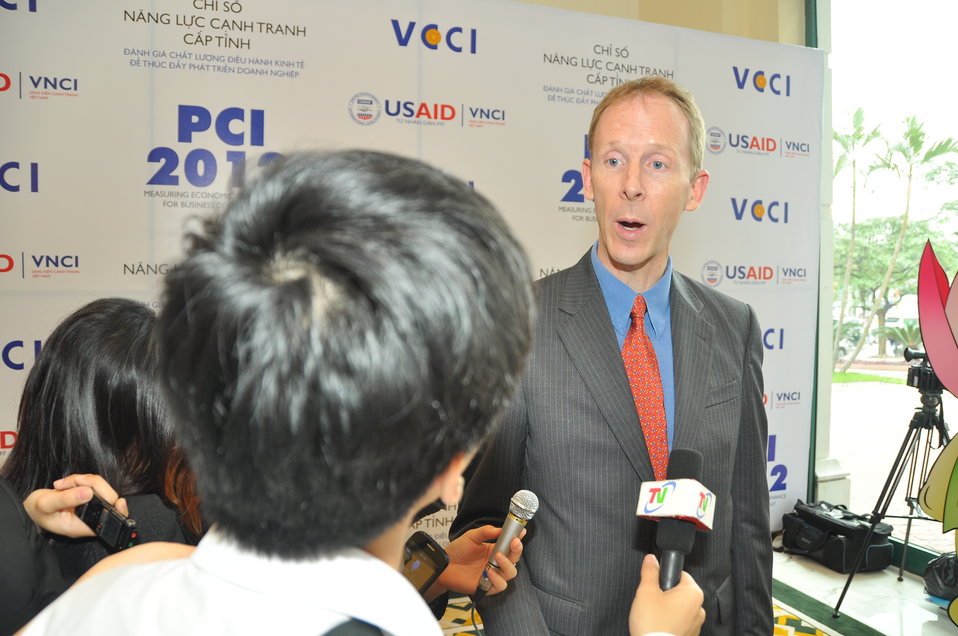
ProvinUSAID Mission Director Joakim Parker talks to the press at the Provincial Competitiveness Index Launch, March 14, 2013cial Competitiveness Index Launch, March 14, 2013

Hanoi, March 13, 2013